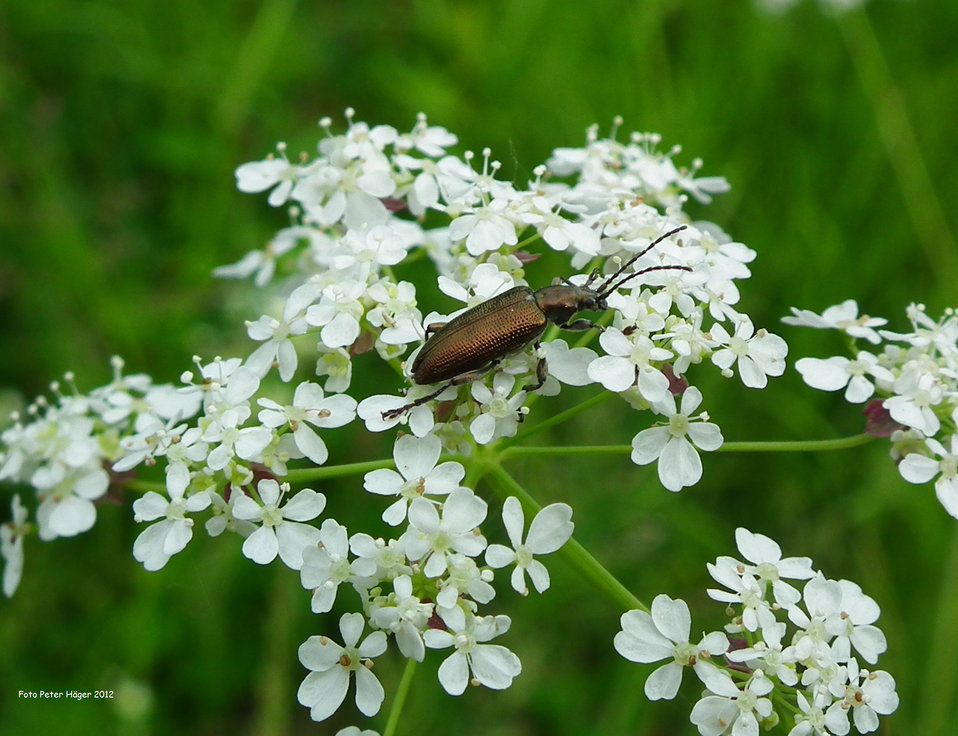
Beetle

Bronze-colored beetle on white flower.